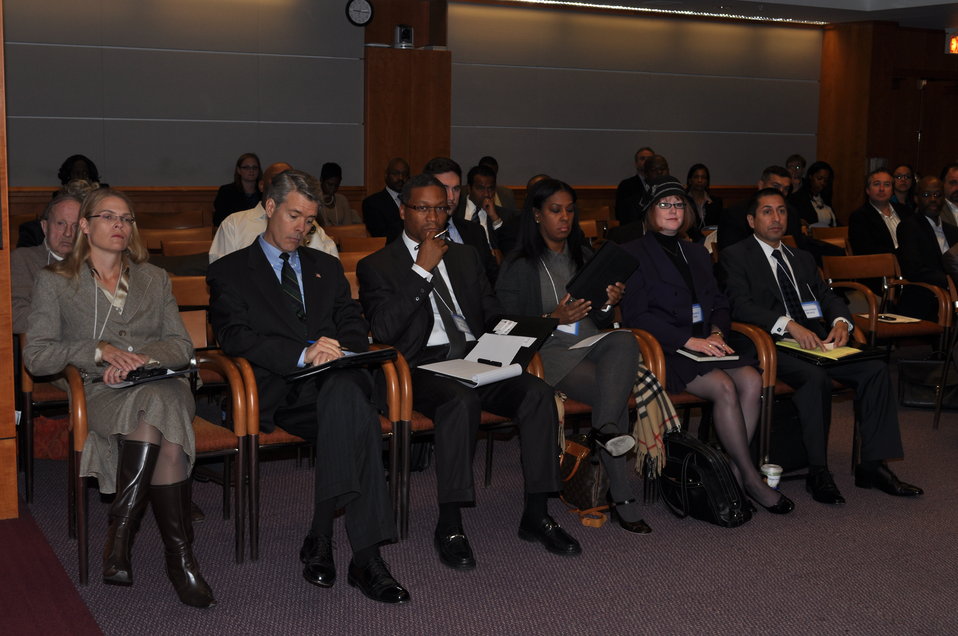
Capitalization Strategies

Workshop for small, minority and women owned businesses. Hosted by the Office of Communications Business Opportunities